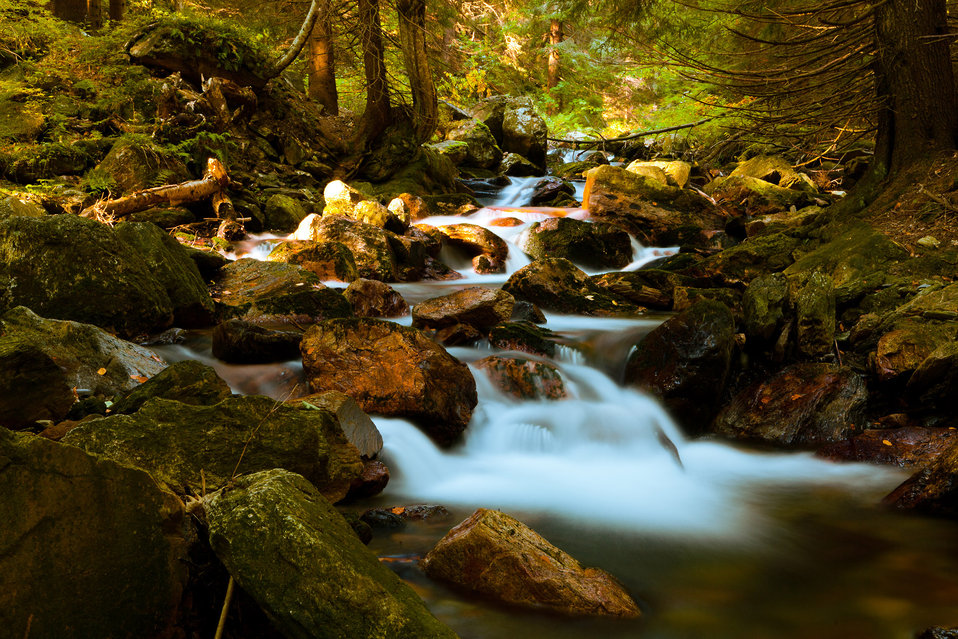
Mountain stream in forest

Mountain stream in motion in the forest.